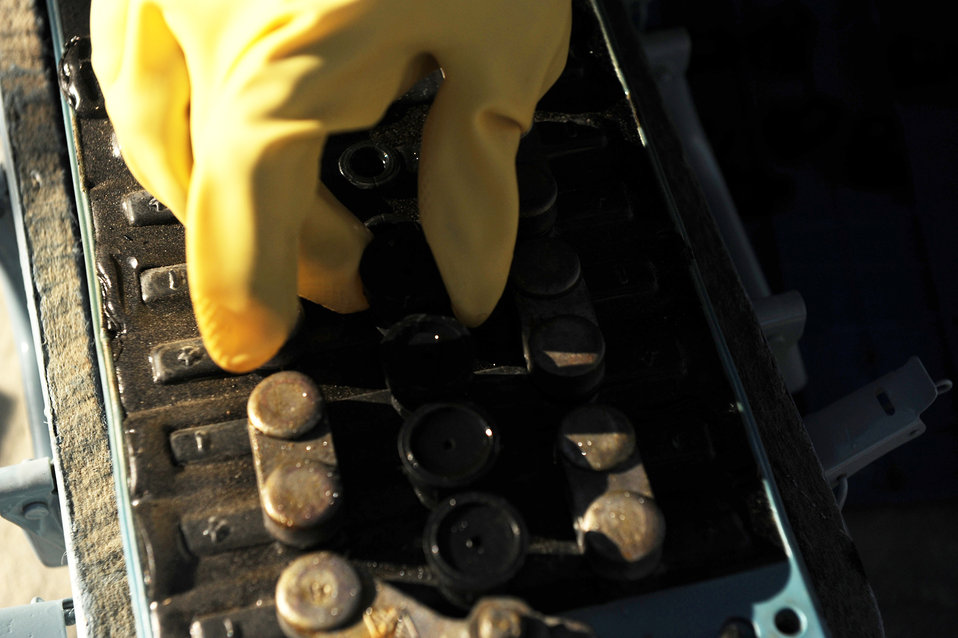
Airmen teach Afghans the art of maintaining

An Afghanistan National Army Air Corps soldier performs routine maintenance on an MI-17 helicopter battery Jan. 5, 2010 at Kandahar Air Field, Afghanistan. Airmen attached to the 738th Air Expeditionary Adviser Group provide maintenance mentorship for ANAAC soldiers.